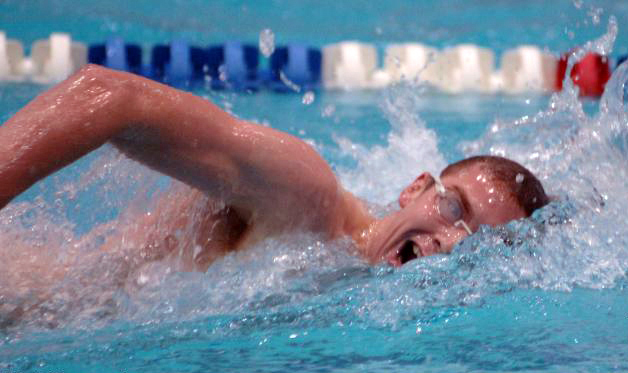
Top student-athlete

U.S. Air Force Academy 2006 graduate Matt Karmondy, a member of the school's swimming and diving team, was honored as the 2005 Mountain West Conference Male Student-Athlete of the Year.